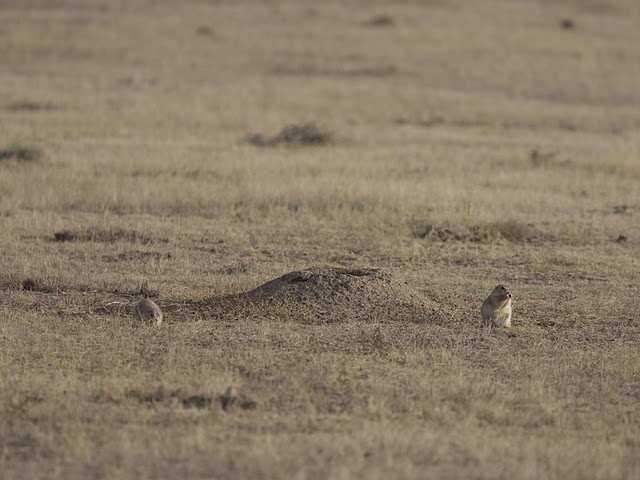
National Black-footed Ferret Conservation Center